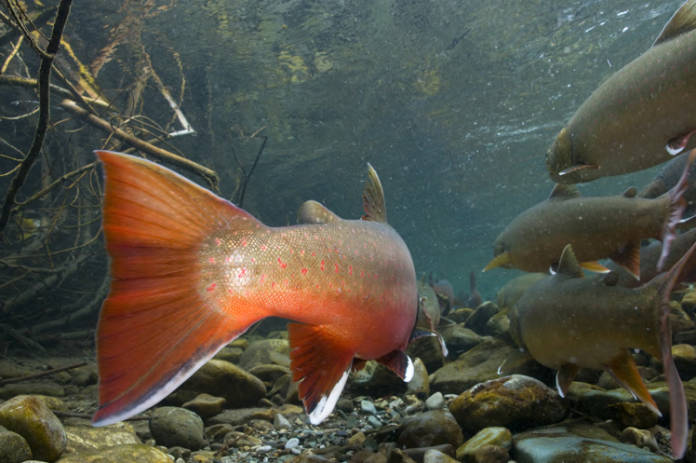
Bull Trout Tail

Region 6 bull trout coordinator, Wade Fredenberg, teamed with noted Geographic photographer Joel Sartore in 2009 to capture underwater and aquarium-staged shots of bull trout in British Columbia’s Wigwam River drainage, the headwaters of the Kootenai River, known as the “crown jewel” of bull trout spawning areas.